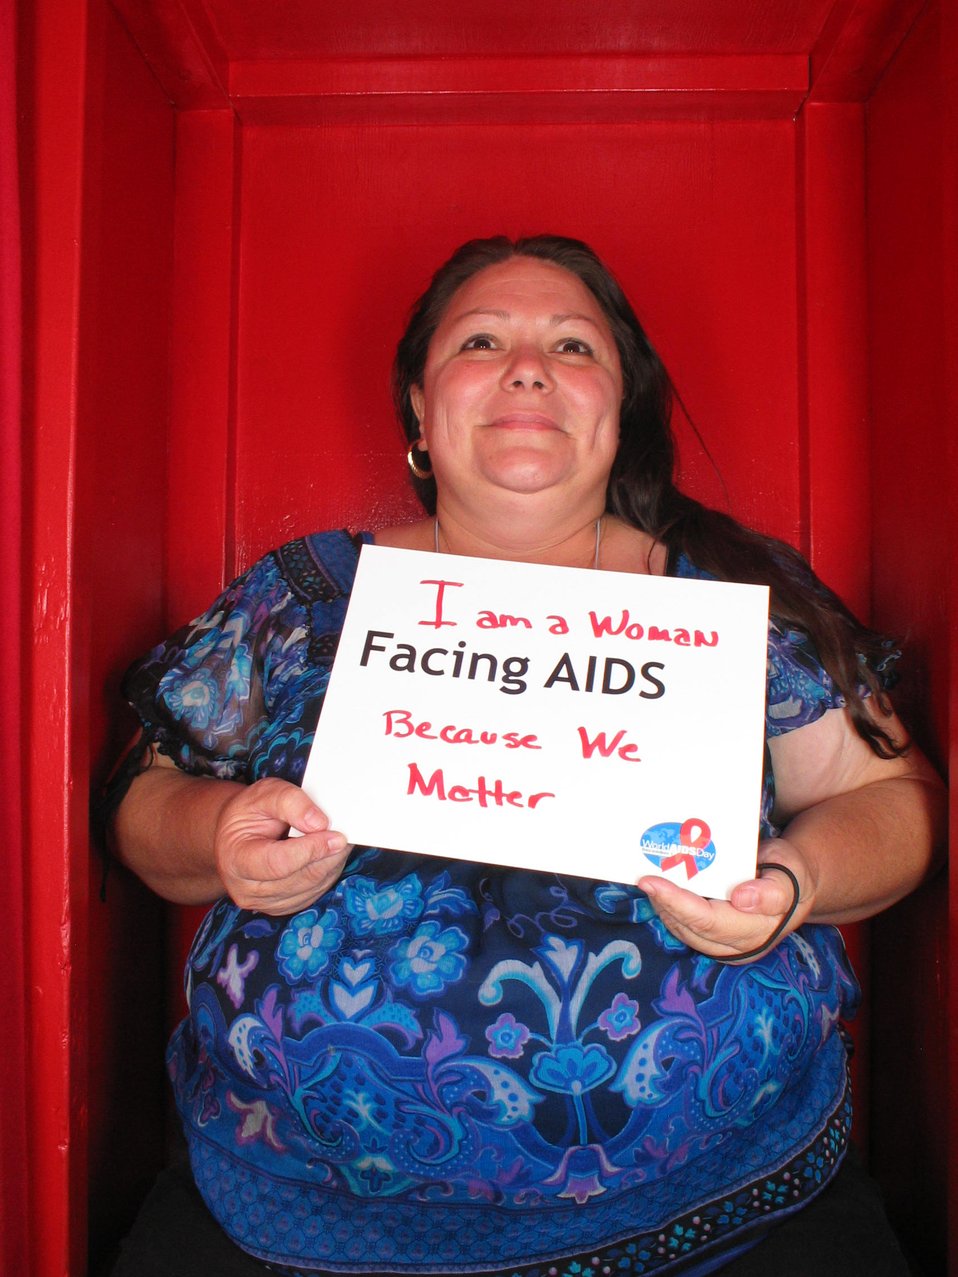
I am a woman Facing AIDS because we matter.